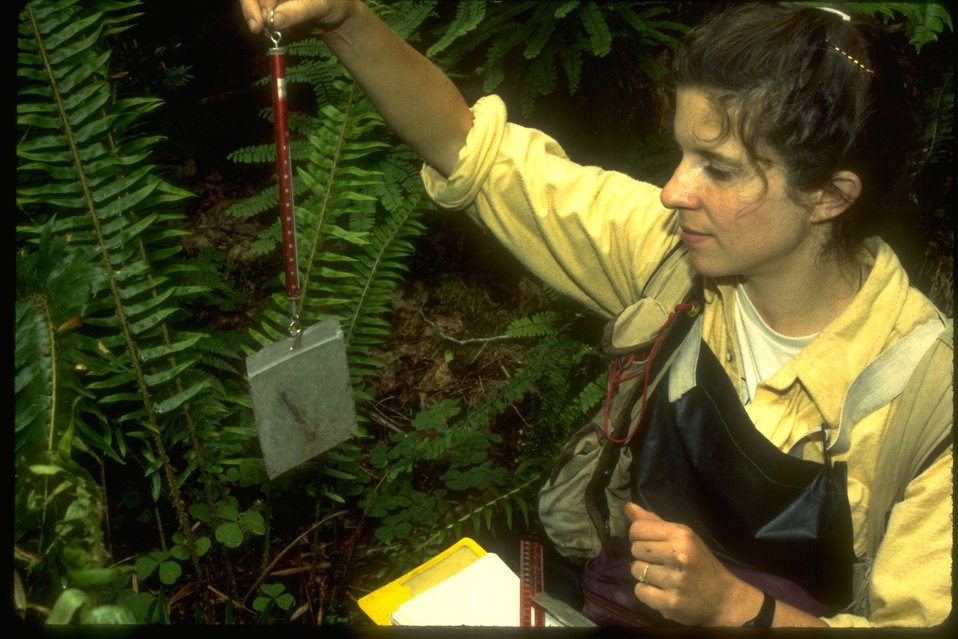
Amphibian Research